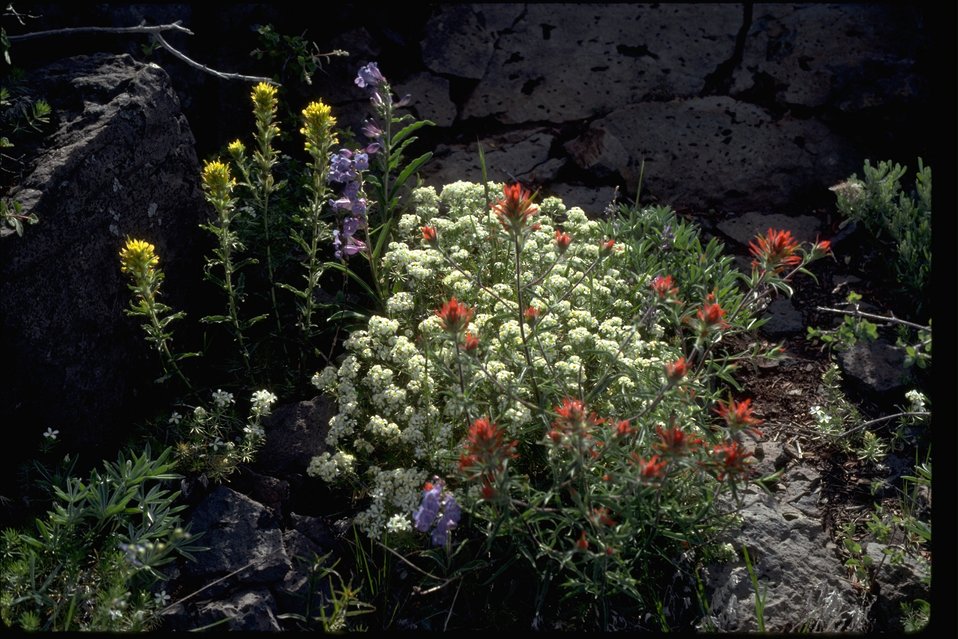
Mixed Wildflowers found in the Rooster Comb Research Natural Area on Steens Mountain, in Southeastern Oregon.